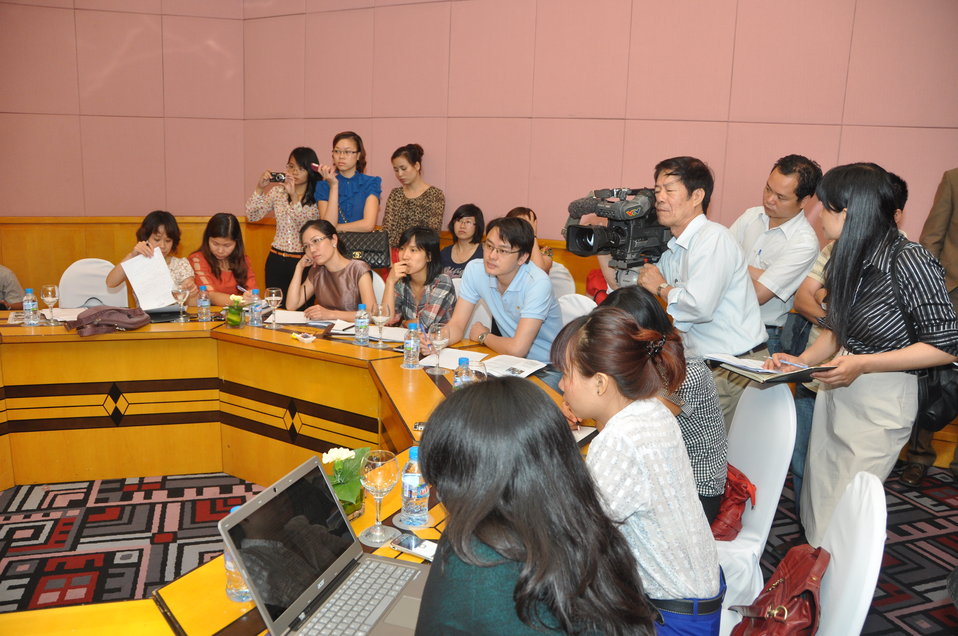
USAID Deputy Administrator Donald Steinberg meets the press in Hanoi on May 8.

USAID Deputy Administrator Donald Steinberg Visits Vietnam: USAID Photo